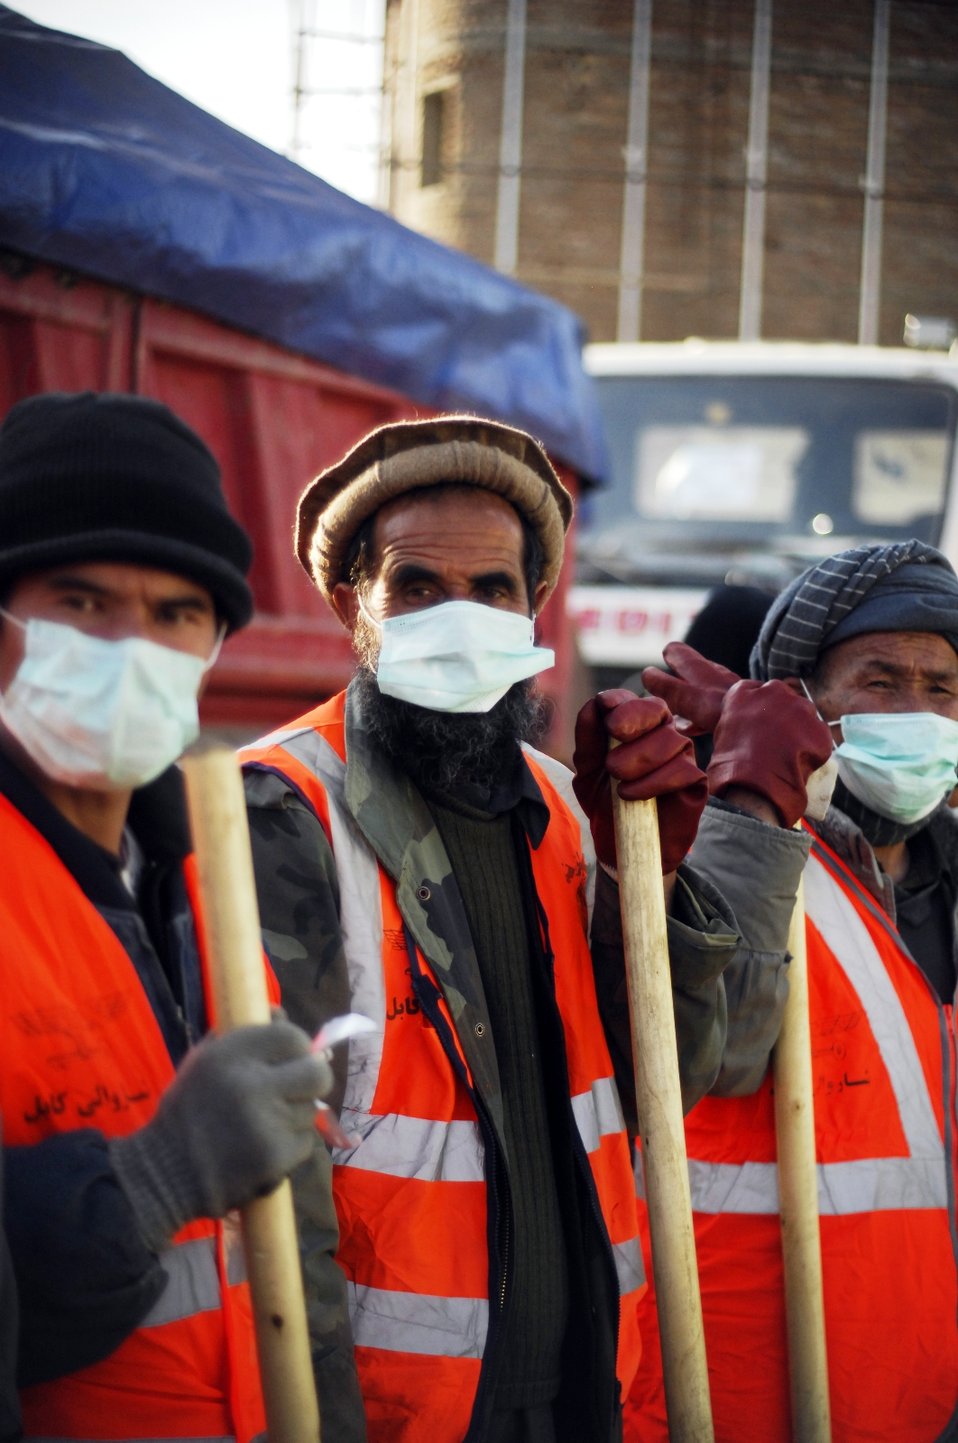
Care14